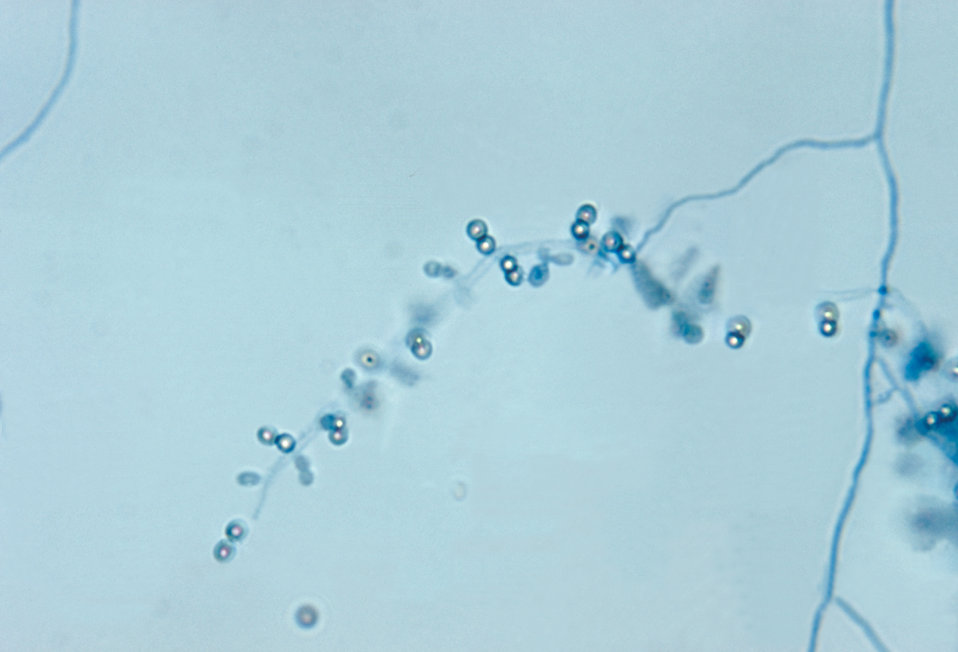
This micrograph reveals mycelia and pairs of spores of a Gram-positive Microbispora sp..